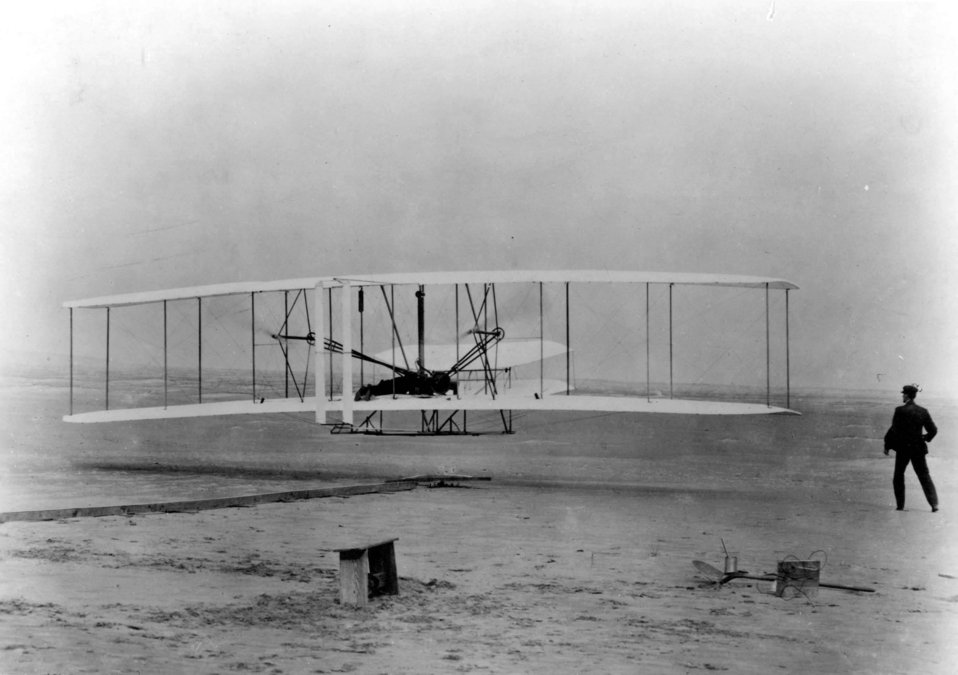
100 Years of Flight

KITTY HAWK, N.C. -- The Wright Brothers conduct the first flight by man with a motor driven, heavier-than-air machine on Dec. 17, 1903.